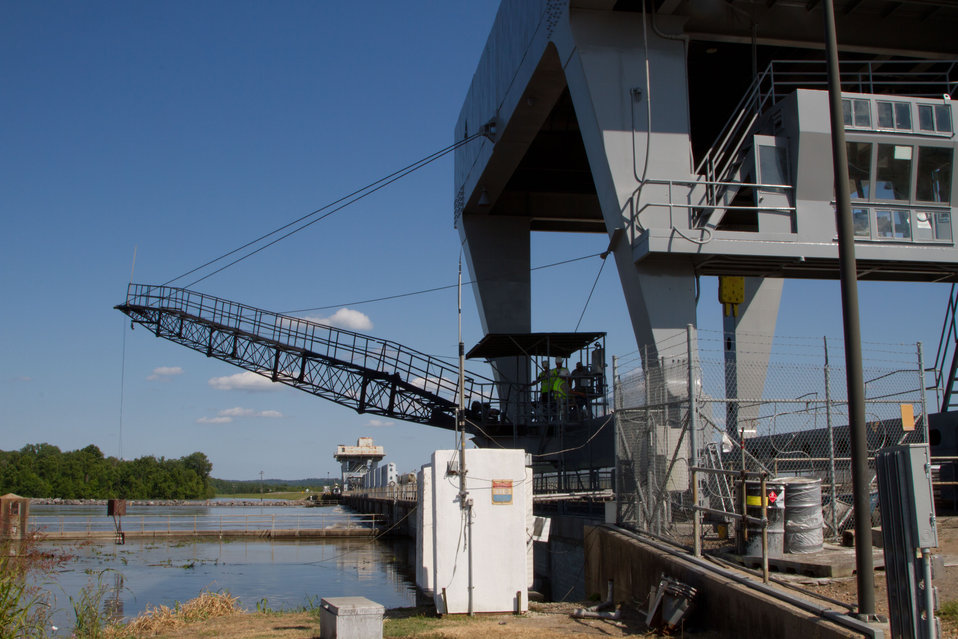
The Army Corps of Engineers conduct daily depth measurements along the intake side of The Old River Control Complex, Low Sill Structure in Concordia Parish, LA, on Tuesday, May 17, 2011. The measurements tell both the condition along the intake “ramp” and allow them to calculate the flow through the gates. The Old River Control Complex is designed to channel as much as 30 percent of the Mississippi River’s flow into the Gulf of Mexico through it’s eleven 44-foot wide gates across 566 foot span that separates the Mississippi and (the outflow channel to the) Red and Atchafalaya Rivers. Rated at 300,000 million gallons per minute (note: That’s more than seven Olympic sized swimming pools every second). Although this helps the Mississippi River, it (along with other concerns, puts back pressure on the Red River and other waterways, possibly causing some flooding of farms to avoid a catastrophic breech of the levee system. Most of the gates have been opened by a rolling crane and stored in racks. Debris, some as larger than telephone polls make their way through the gates and pool in eddies. The constant motion and contact with other objects, strip trees of their branches and bark. 20-30 pound Carp can frequently be seen jumping out of the white water.